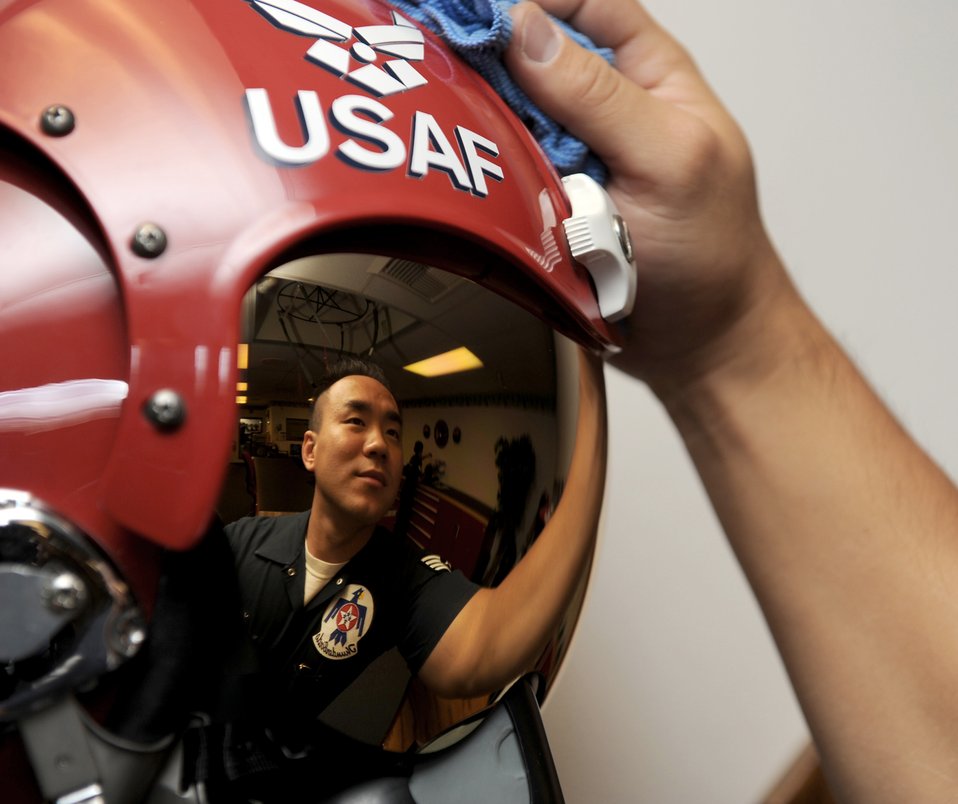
Keeping it shiny

Staff Sgt. Sang Lee wipes down a display helmet in the U.S. Air Force Air Demonstration Squadron 'Thunderbirds' flight equipment room at Nellis Air Force Base, Nev., Dec. 17, 2010. Sergeant Lee is an aircrew flight equipment specialist with the Thunderbirds.